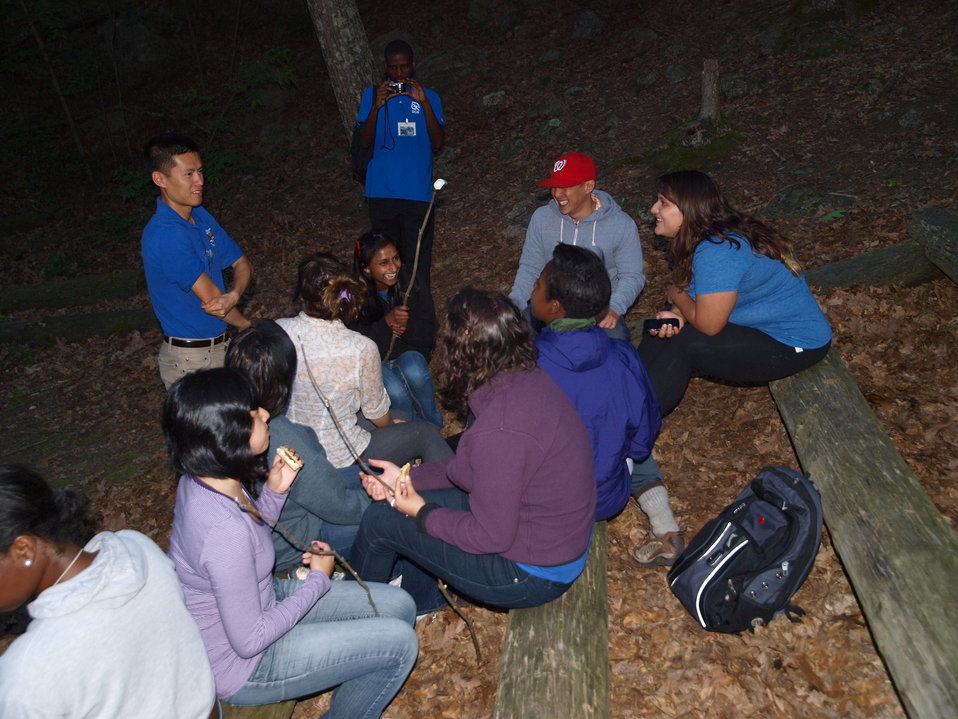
Campfire!

Justin Chow and Mao Lin know how to make everyone laugh.